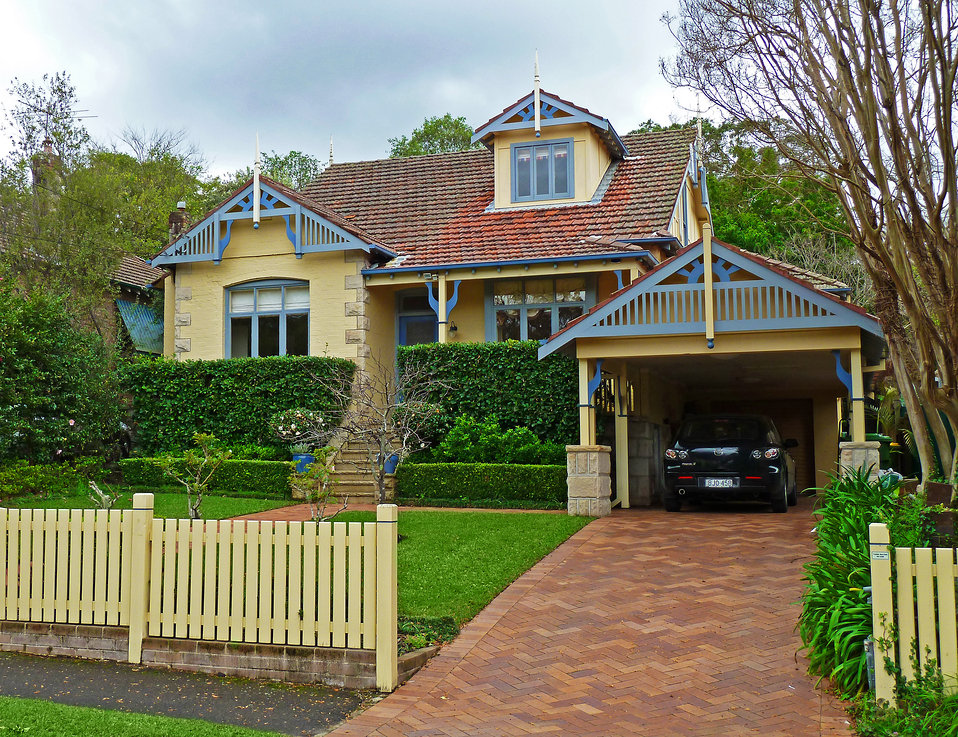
10 Nelson Street, Gordon, New South Wales, Australia.